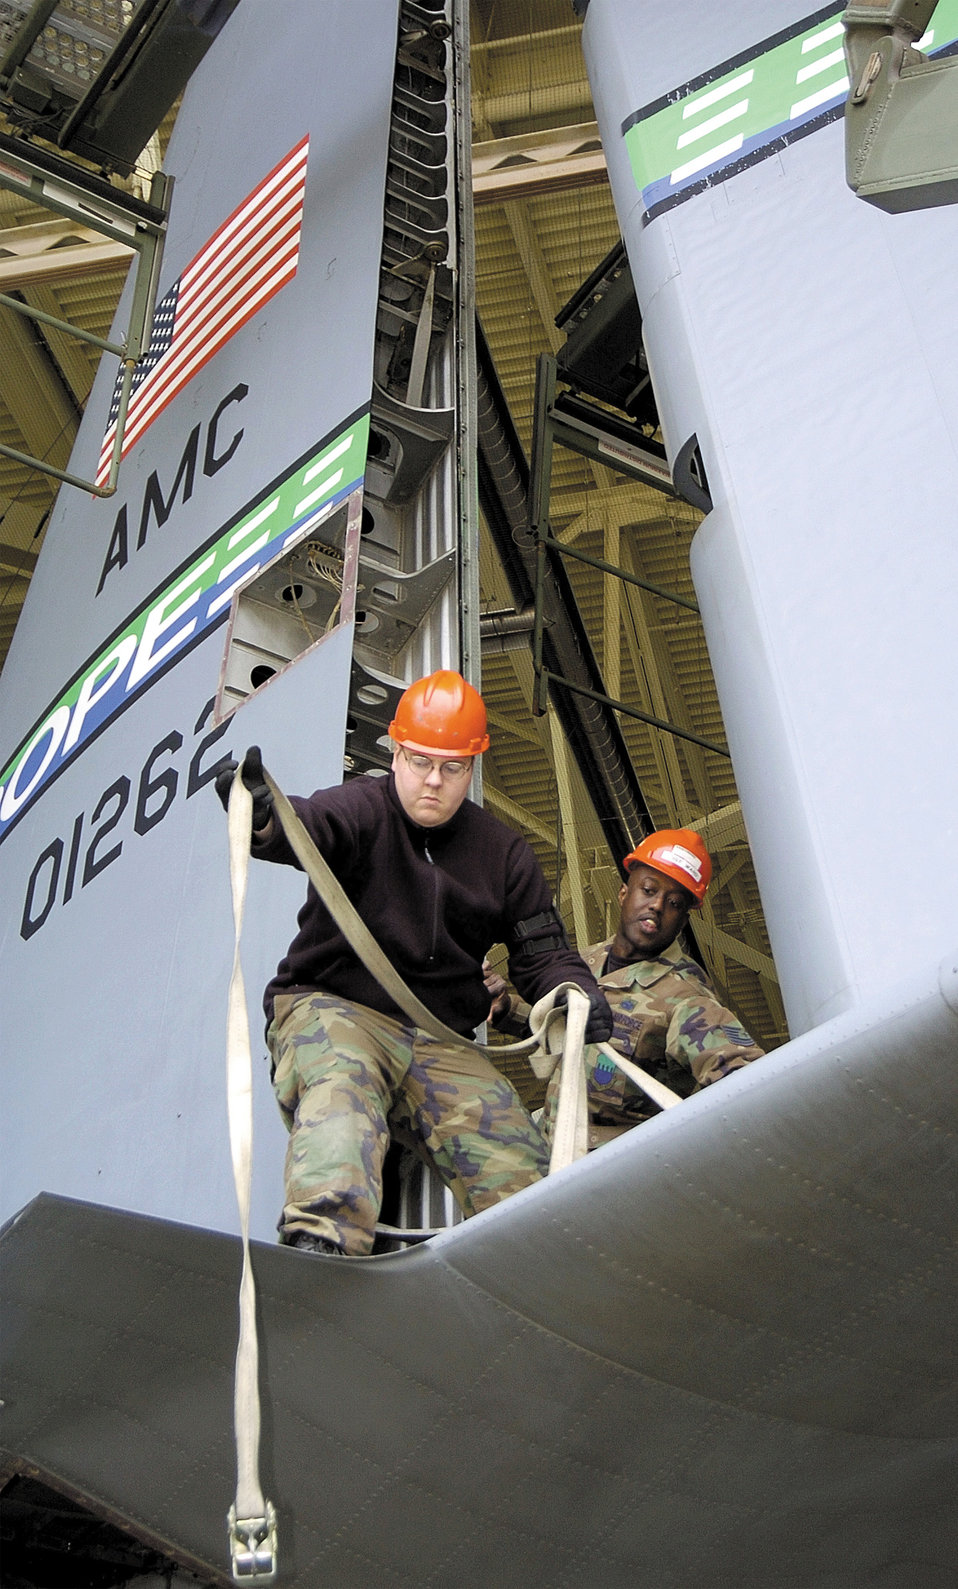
No job too big

POPE AFB, N.C. -- Airman 1st Class Jacob Kinkade (left) and Tech. Sgt. Darin Ward disconnect a C-130 Hercules rudder from a vertical stabilizer just before lowering it to maintainers. The 23-foot rudder, weighing about 250 pounds, was removed to allow other maintenance. The rudder is the aircraft's largest primary flight control responsible for the aircraft's direction in flight. The Airmen are both assigned to the 43rd Maintenance Squadron's aerospace repair section here.